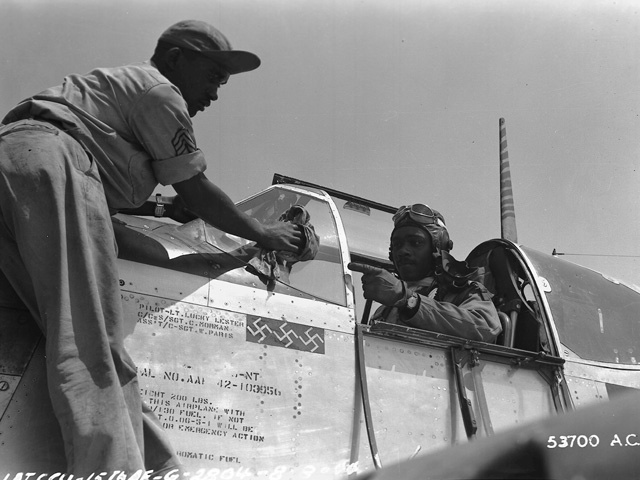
Clarence D.

2nd Lt. Clarence D.